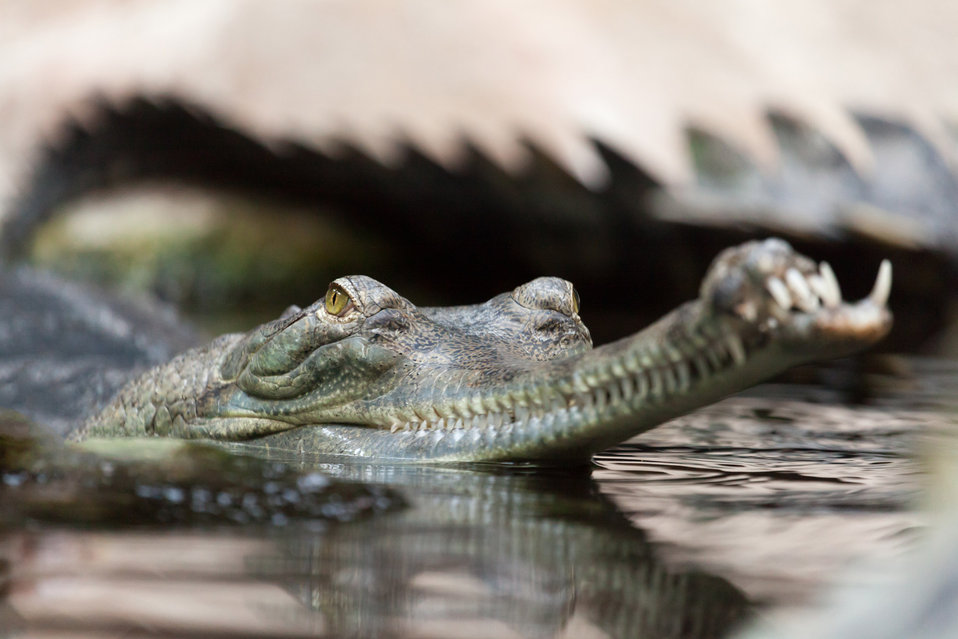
Gharial in water.